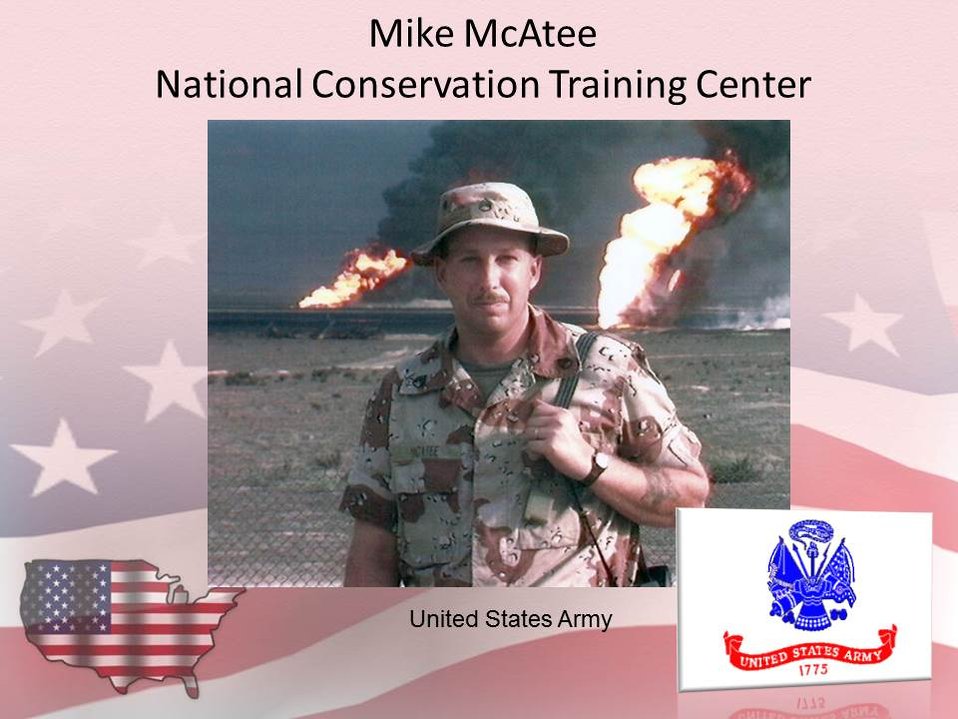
Mike McAtee